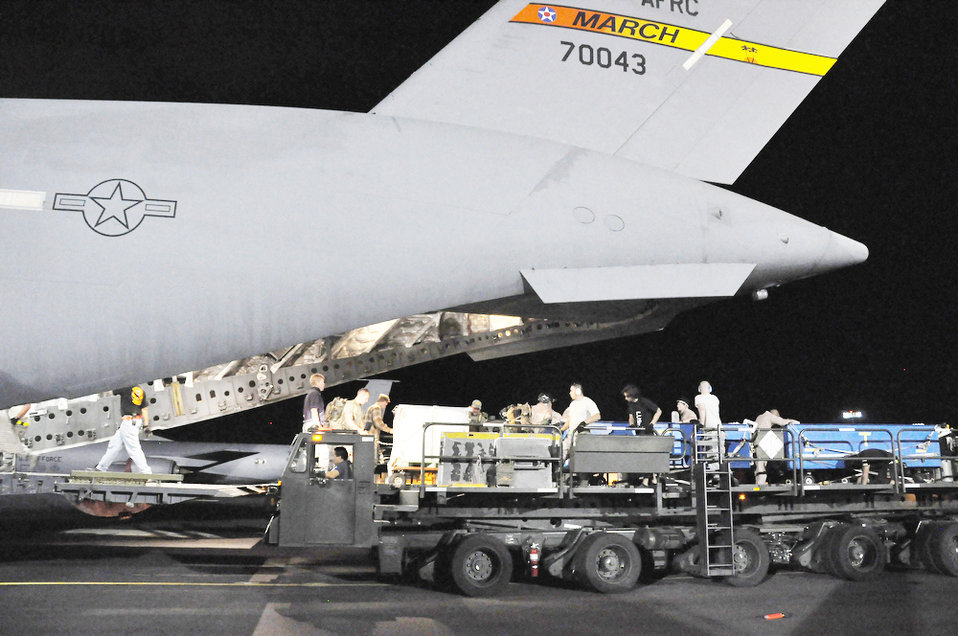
Dolphins fly to New Caledonia with Hickam C-17 crew

Airmen, Sailors and contractors unload dolphins assigned to the Navy Marine Mammals Program from a C-17 Globemaster III from March Air Reserve Base, Calif., to a C-17 from Hickam AFB, Hawaii, Nov. 8, 2009. A Hickam AFB C-17 aircrew will take the Sailors and dolphins to Noumea, New Caledonia, where they will participate in Lagoon Minex 2009, which is a humanitarian project where U.S. Navy, French, Australian and New Zealand demolition crews will remove mines left over from World War II from the surrounding water of the area.